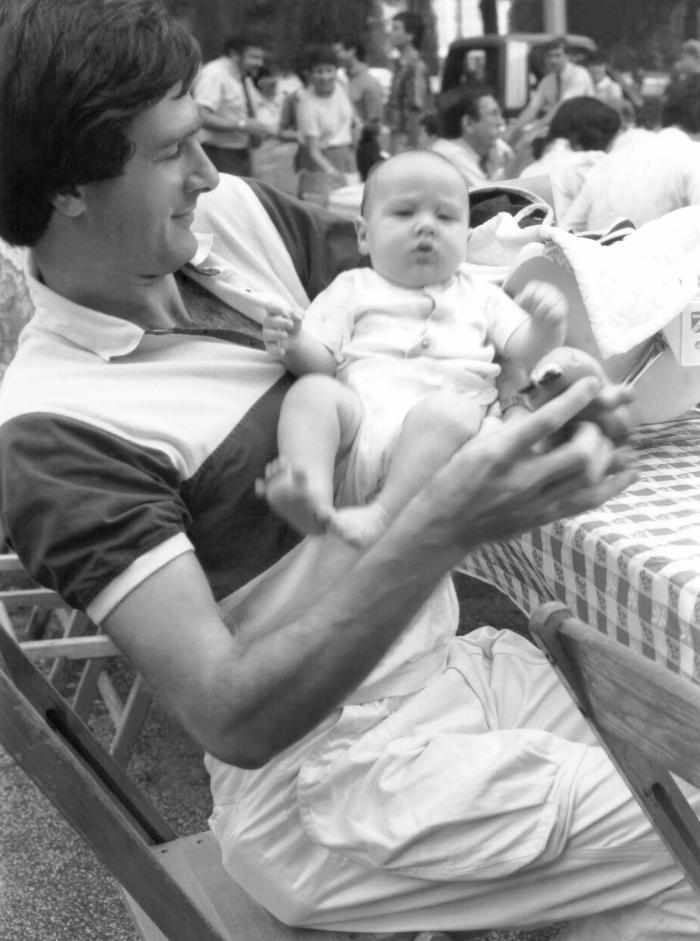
This photograph shows a baby being held by an adult male during a picnic.